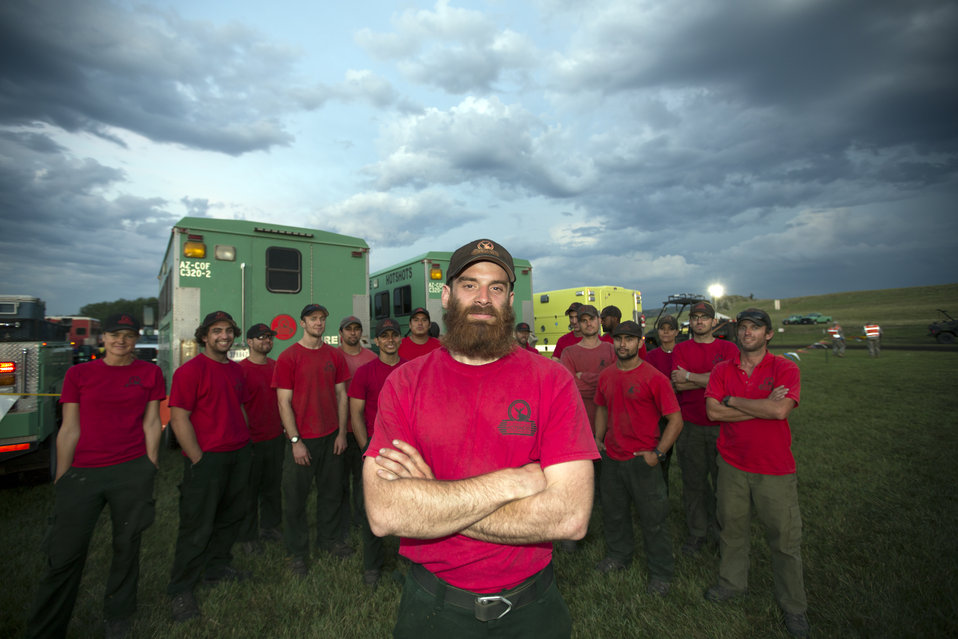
Flagstaff, AZ Mormon Lake Interagency Hotshot Crew (IHC) member Coleman Loughery fights the Myrtle Fire in Black Hills National Forest, SD on July 24, 2012. The Flagstaff, AZ Mormon Lake Interagency Hotshot Crew (IHC) are a group of multi-skilled professional wild land firefighters specifically trained, organized, and equipped for rapid response to wildfire situations. The Sacramento IHC specialty is wildfire suppression, but is sometimes assigned other jobs, including search and rescue and disaster response assistance. When not busy fighting fires the Sacramento IHC work to meet resource goals on their home forest lands through thinning, prescribed fire implementation, habitat improvement or trail construction projects.